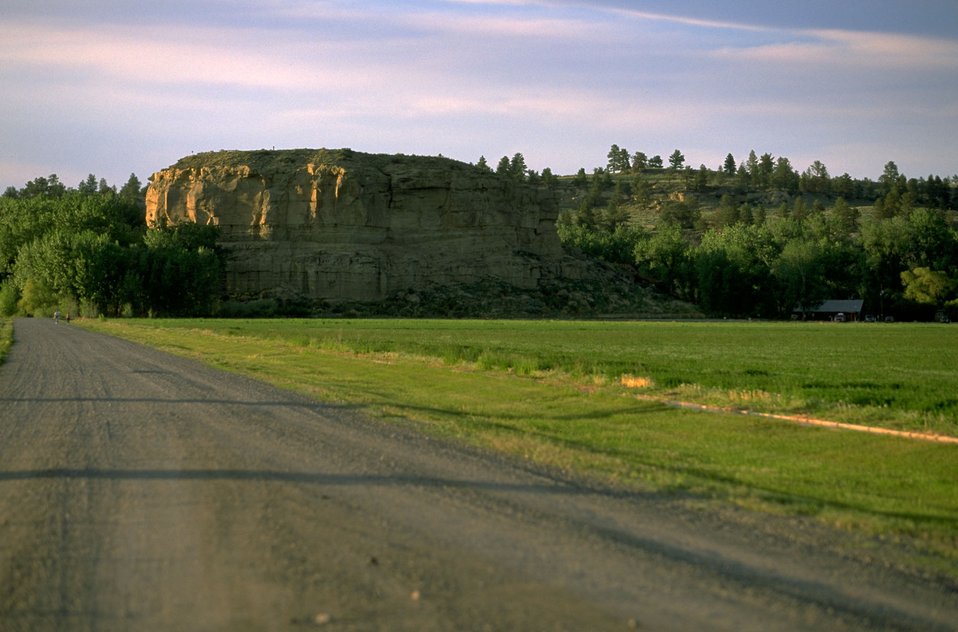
A view from the southwest of Pompeys Pillar in the late afternoon sun